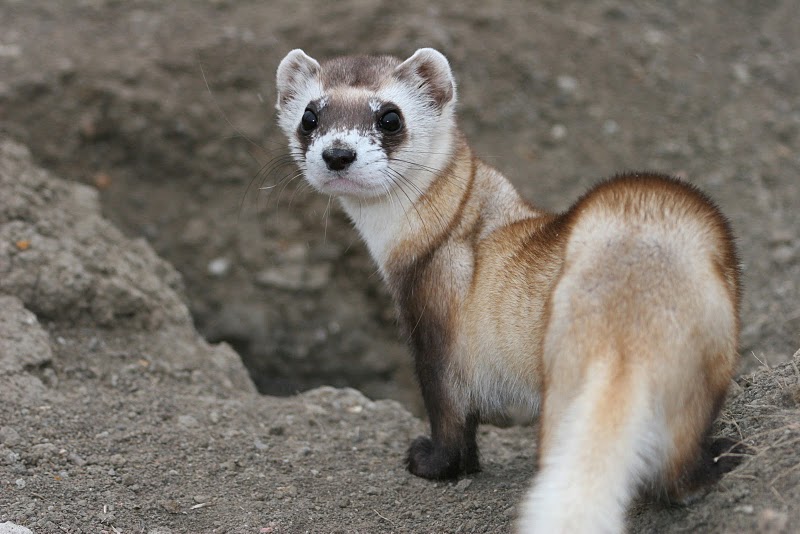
Black-footed Ferret